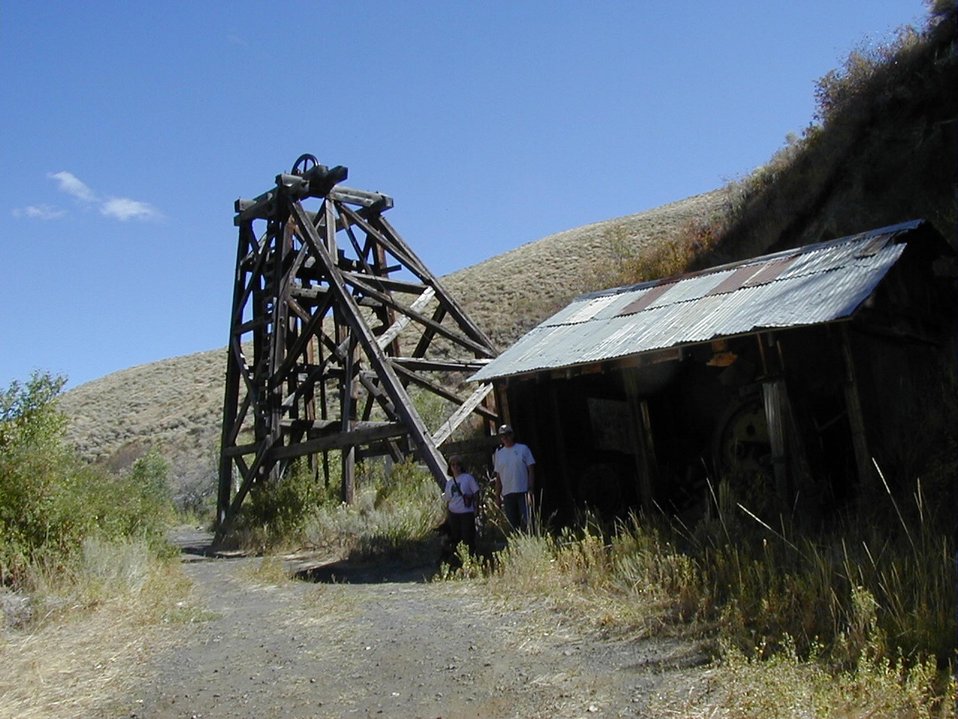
Snoose Mine, Head frame, Colorado Gulch Bellevue Idaho Shoshone Field Office South Central Idaho USRD Upper Snake River District